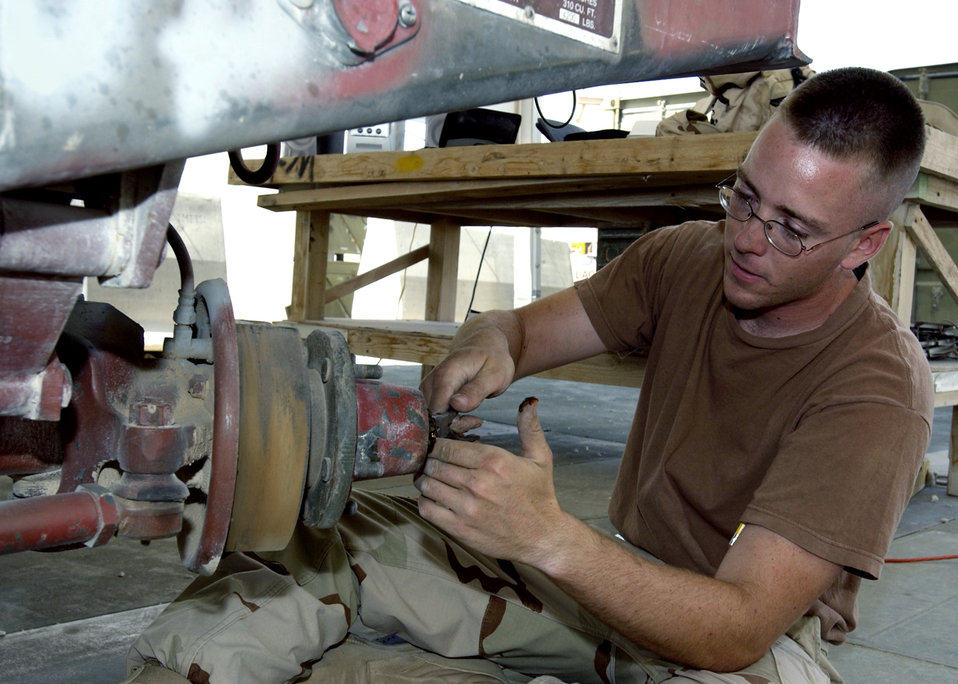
An explosive business

SOUTHWEST ASIA -- Airman 1st Class Brian Perry works on a vehicle axle. Airman Perry is deployed from Royal Air Force Lakenheath, England. He is assigned to the 379th Expeditionary Maintenance Squadron munitions flight at a forward-deployed location.